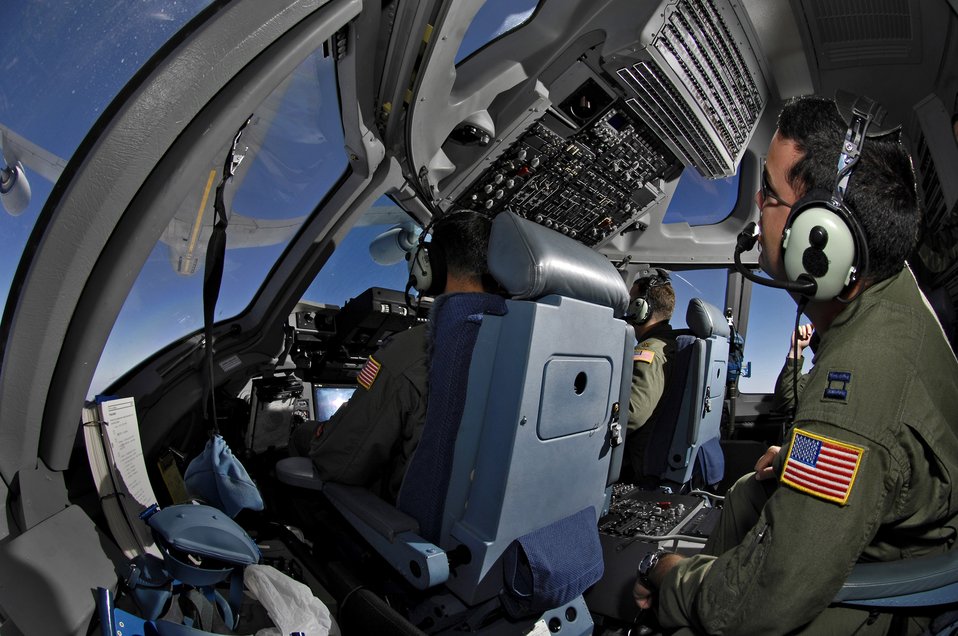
Hickam crew prepares for AMC Rodeo

C-17 Globemaster III aircrew members practice aerial refueling as their aircraft receives fuel from a KC-135 Stratotanker June 22 during a refueling training mission over the Pacific Ocean. The C-17 from the 535th Airlift Squadron at Hickam Air Force Base, Hawaii, and the KC-135 from the 909th Air Refueling Squadron at Kadena Air Base, Japan, are practicing for the upcoming 2007 Air Mobility Command Rodeo.